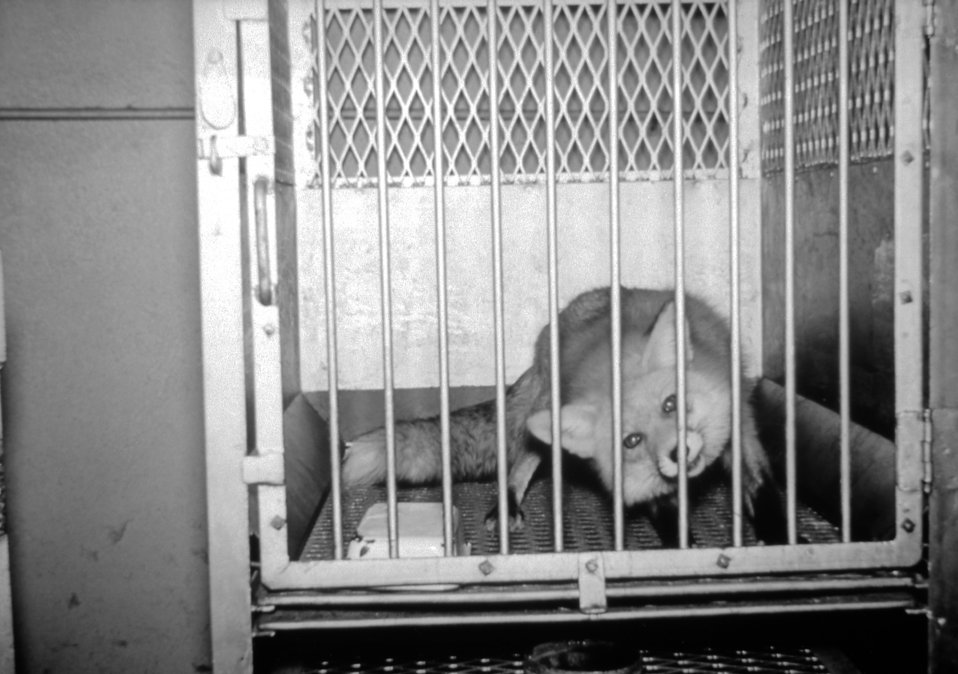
This photograph depicts a caged rabid fox.